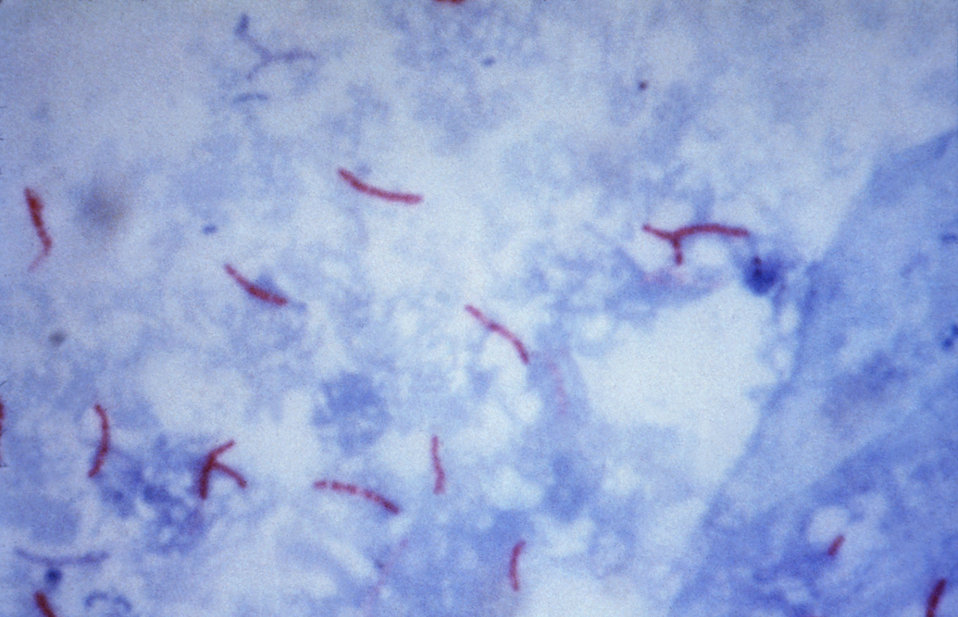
This photomicrograph reveals Mycobacterium tuberculosis bacteria using acid-fast Ziehl-Neelsen stain; Magnified 1000X.